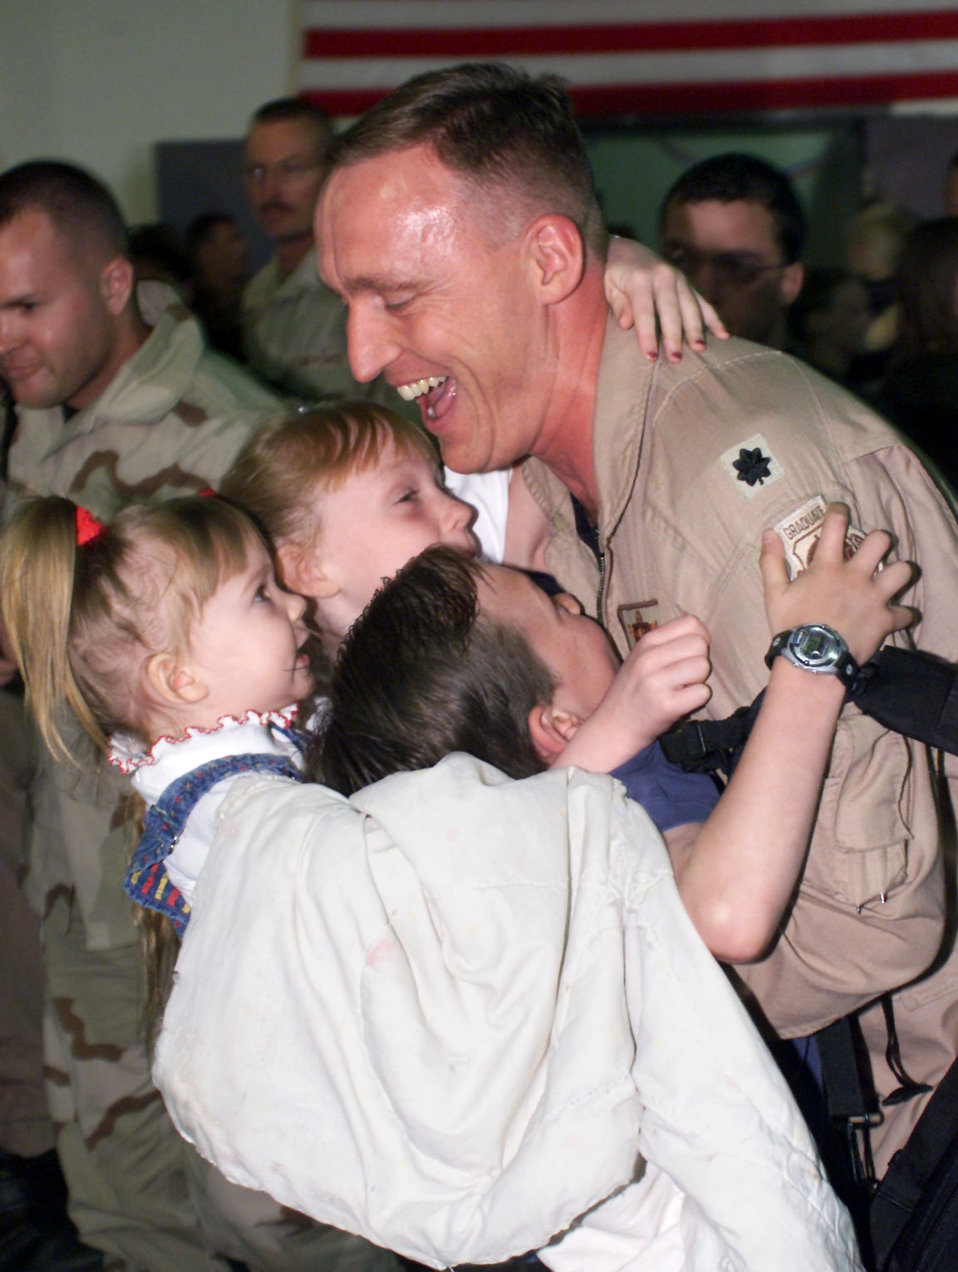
Armload of love

ELLSWORTH AIR FORCE BASE, S.D. -- Lt. Col. Mark Schlichte, the 28th Bomb Wing chief of safety here, hugs his children (left to right), Mary Kate, Meghan and Mark, after his return home May 21. Approximately 280 airmen returned here from deployments supporting operations Enduring Freedom and Iraqi Freedom.